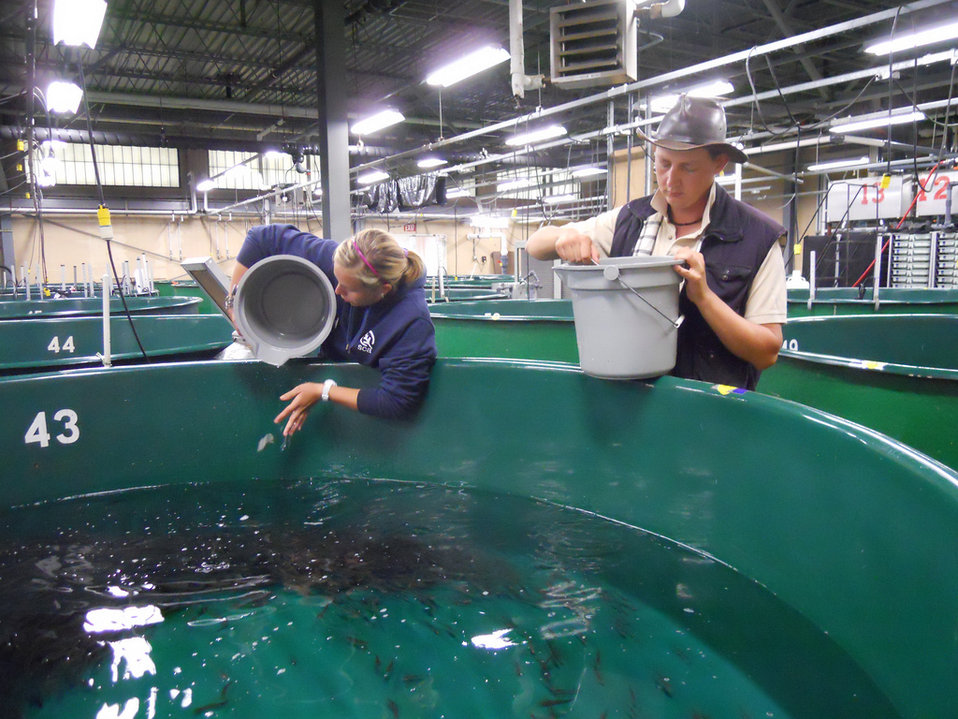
Lake trout sampling

U.S. Fish and Wildlife Service